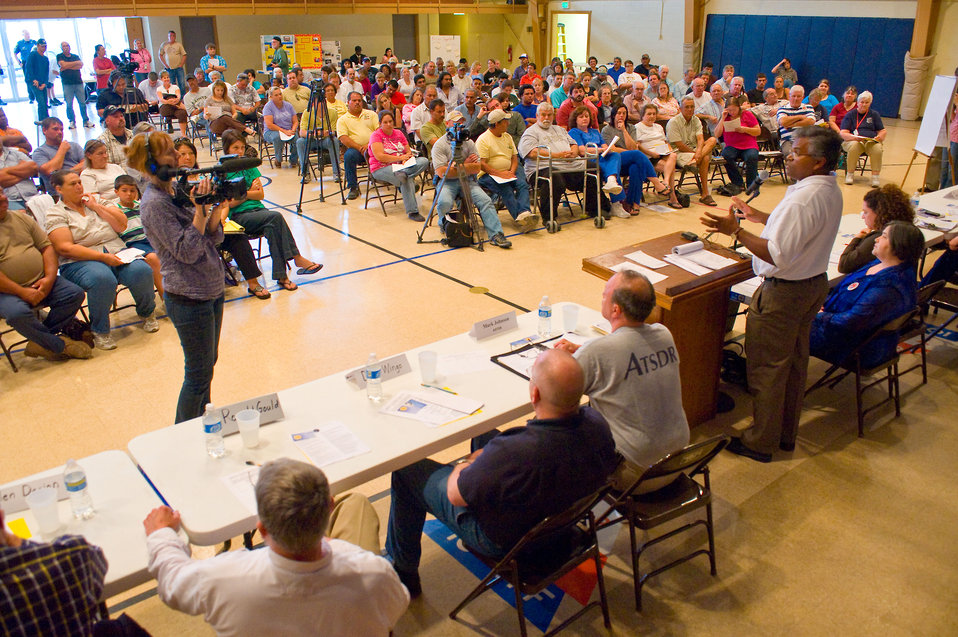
Conversations about the BP oil spill

May 13, 2010. EPA senior officials, alongside other responding agency representatives listen in and speak to the concerns of nearby residents.